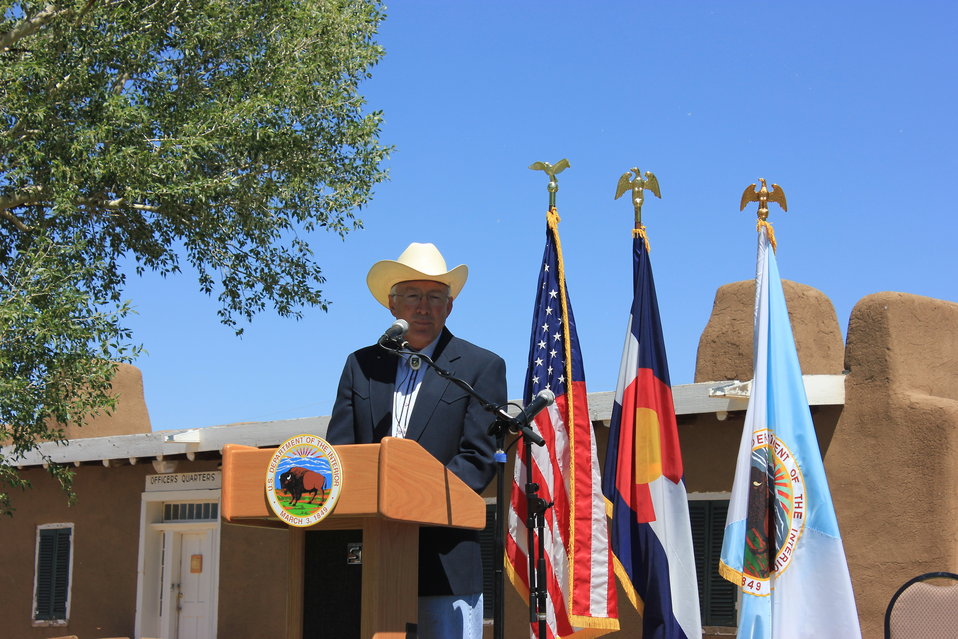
Historic Conservation Easement in Sangre de Cristo Mountains